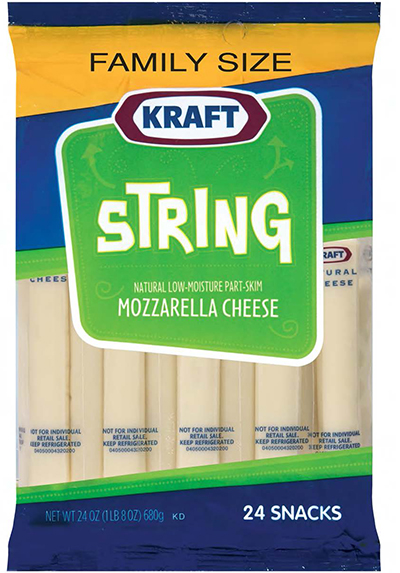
RECALLED – Cheese

October 25, 2013 – Product Recall – Kraft Voluntarily Recalls Some Varieties of Kraft And Polly-O String Cheese And String Cheese Twists Due to Premature Spoilage.